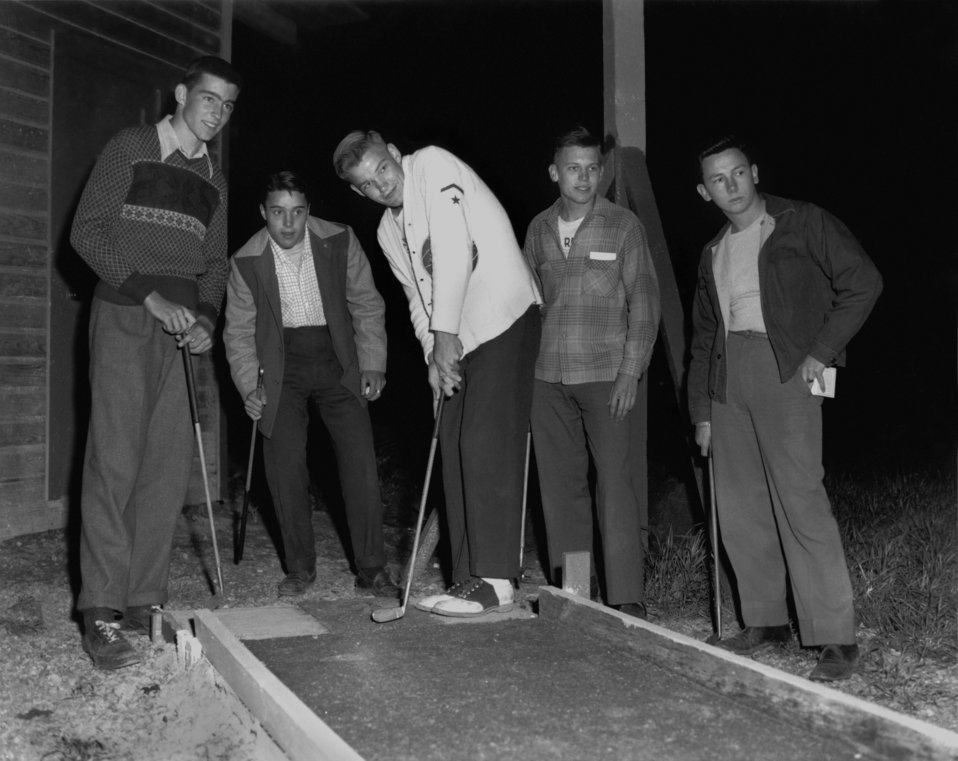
Golf course/ Jefferson center Oak Ridge

PRO467-2 DOE photo by Ed Westcott

Golf course/ Jefferson center Oak Ridge Tennessee 4/26/45